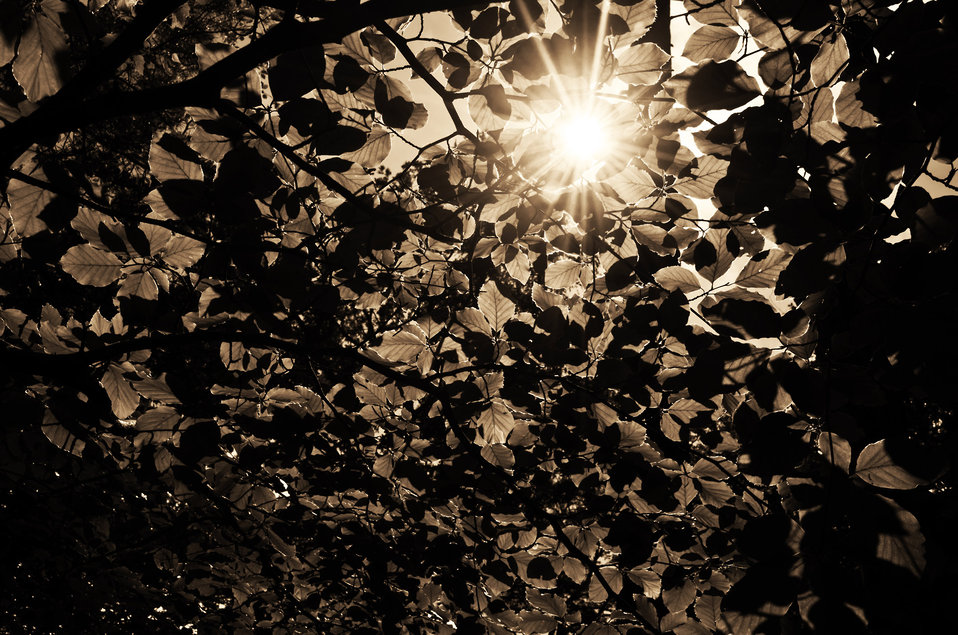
Leaves - background.